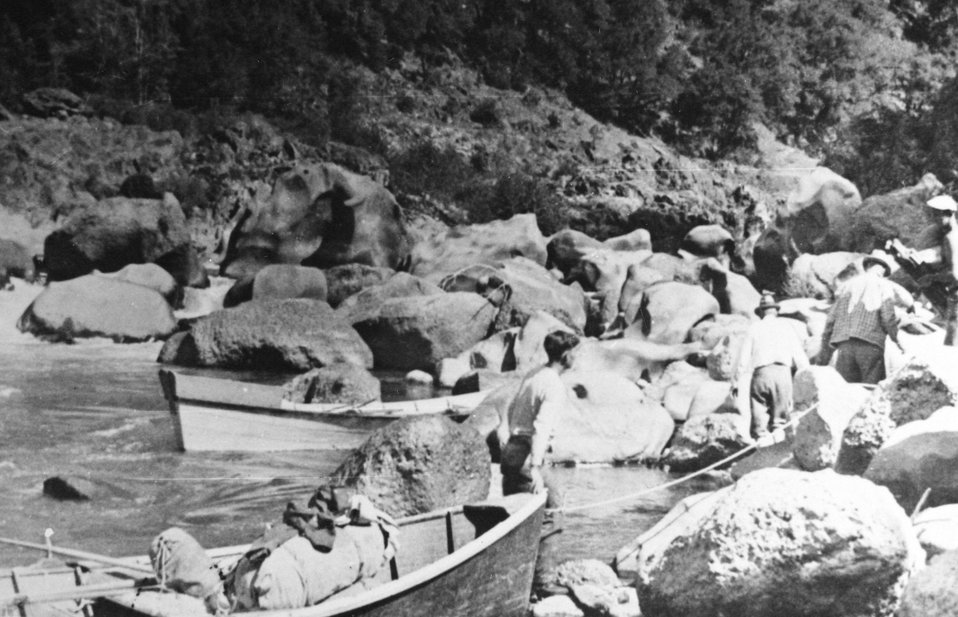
Portaging around Blossom Bar C. 1920